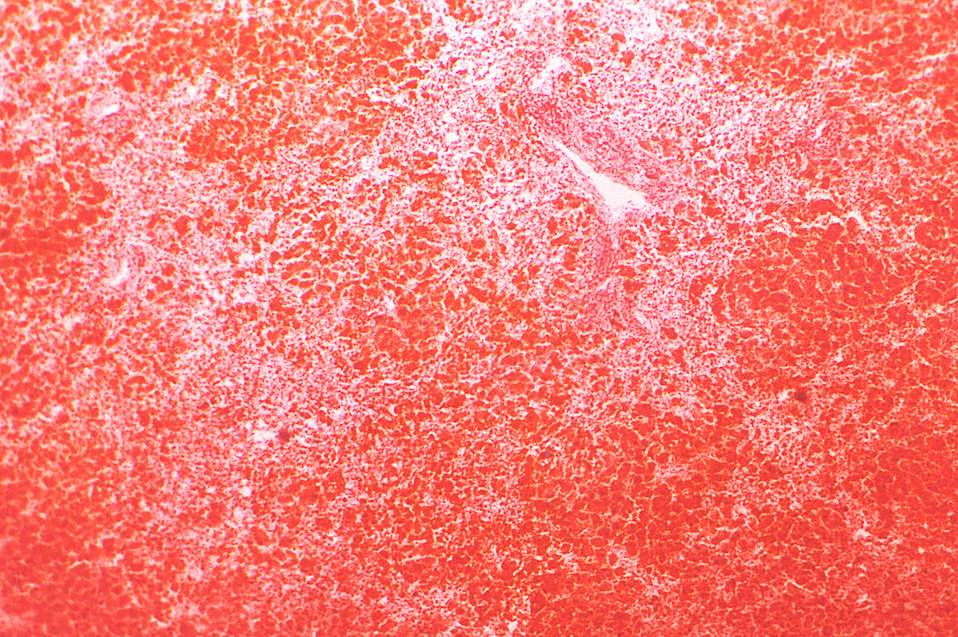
Under a low magnification of only 40X, this Sudan III-stained photomicrograph depicts the cytoarchitectural changes found in a liver tissue specimen extracted from a deceased yellow fever patient. Using the frozen section method of slide preparation, this tissue specimen revealed a 'massive' amount of fatty degeneration. See PHIL 2176, and 8239, depicting TEMs of the yellow fever virus.